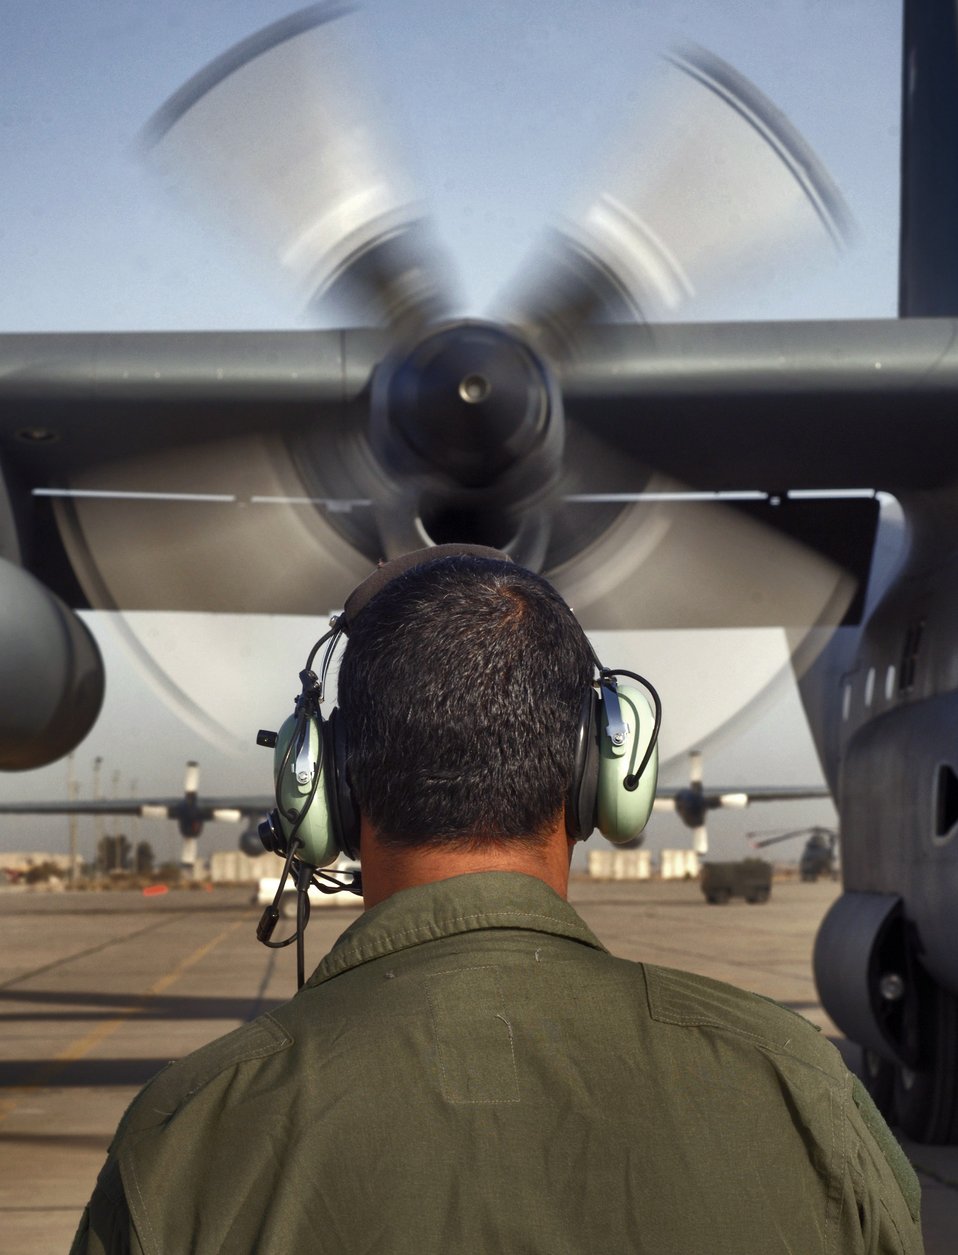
Turboprop

An Iraqi loadmaster monitors the engine start-up of the turboprop engines of a C-130 Hercules at New Al Muthana Air Base on Baghdad International Airport, Iraq, Sunday, Feb. 26, 2006. This is one of three cargo aircraft given to the Iraqi Air Force from the U.S.